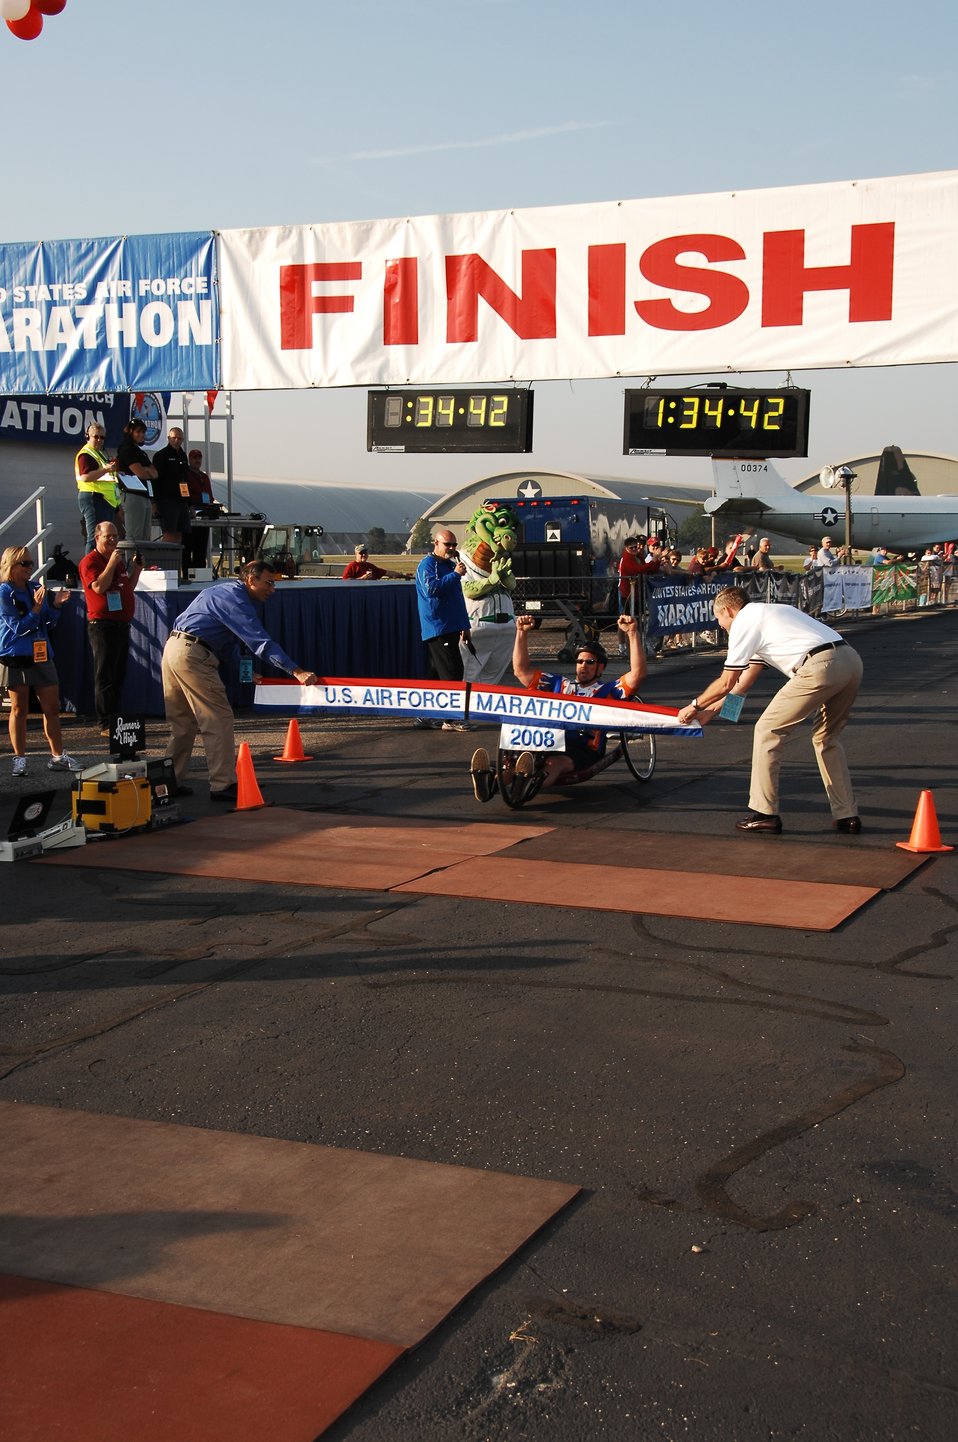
Crossing the line

Glen Ashlock of Brooklyn, Mich., crosses the finish line capturing first place in the Full Marathon, Wheeled Division. A record field of nearly 7,400 runners participated in the 12th Annual U.S. Air Force Marathon at Wright-Patterson AFB, Ohio.